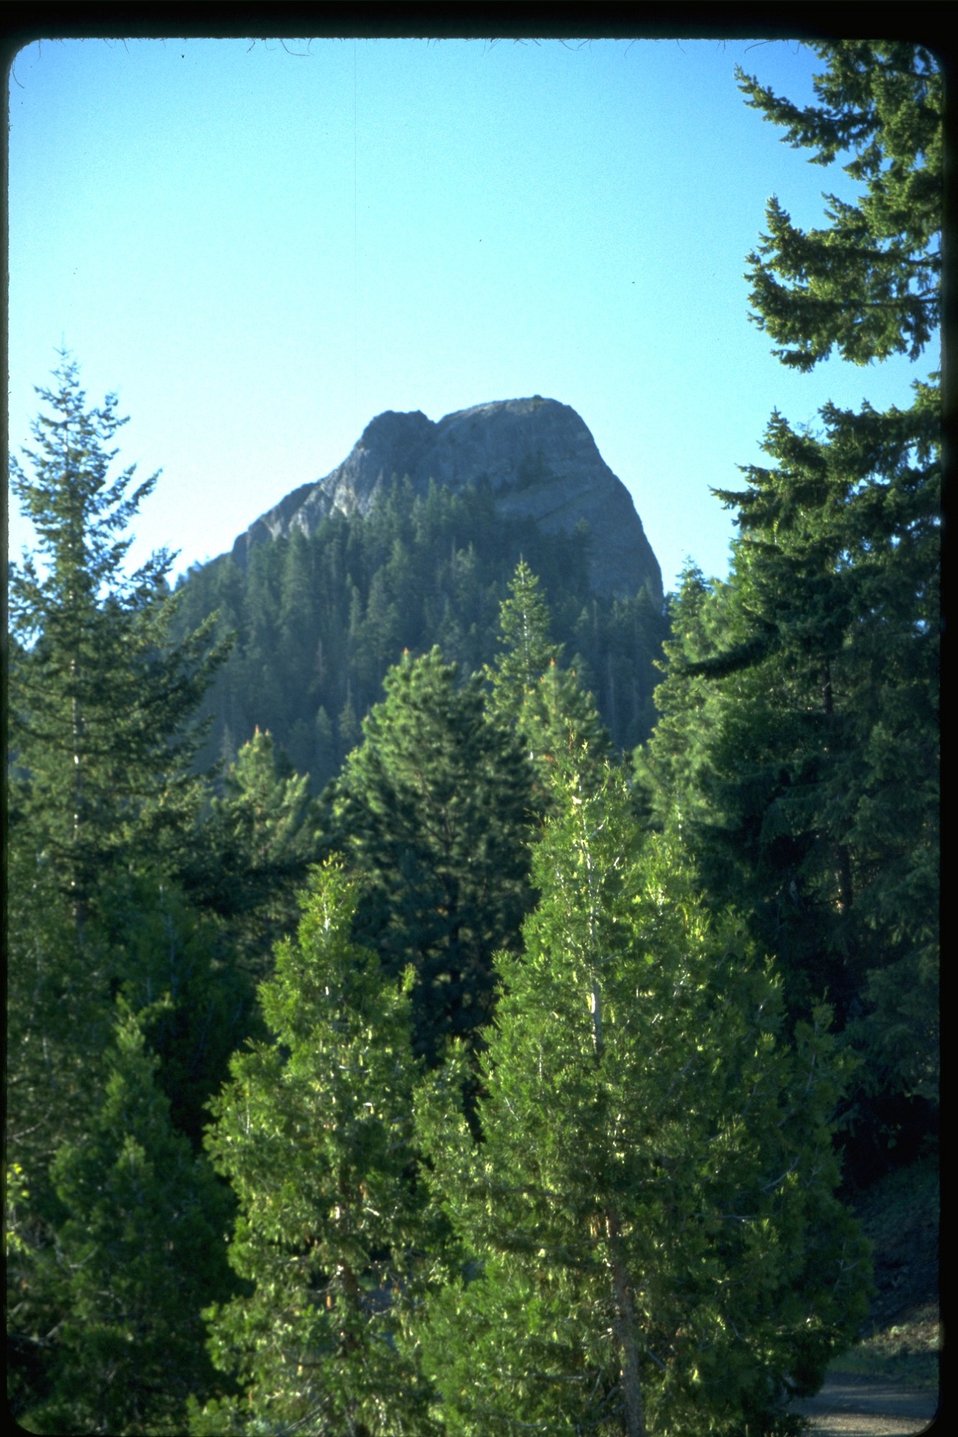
Pilot Rock Cascade-Siskiyou National Monument (SCNM).